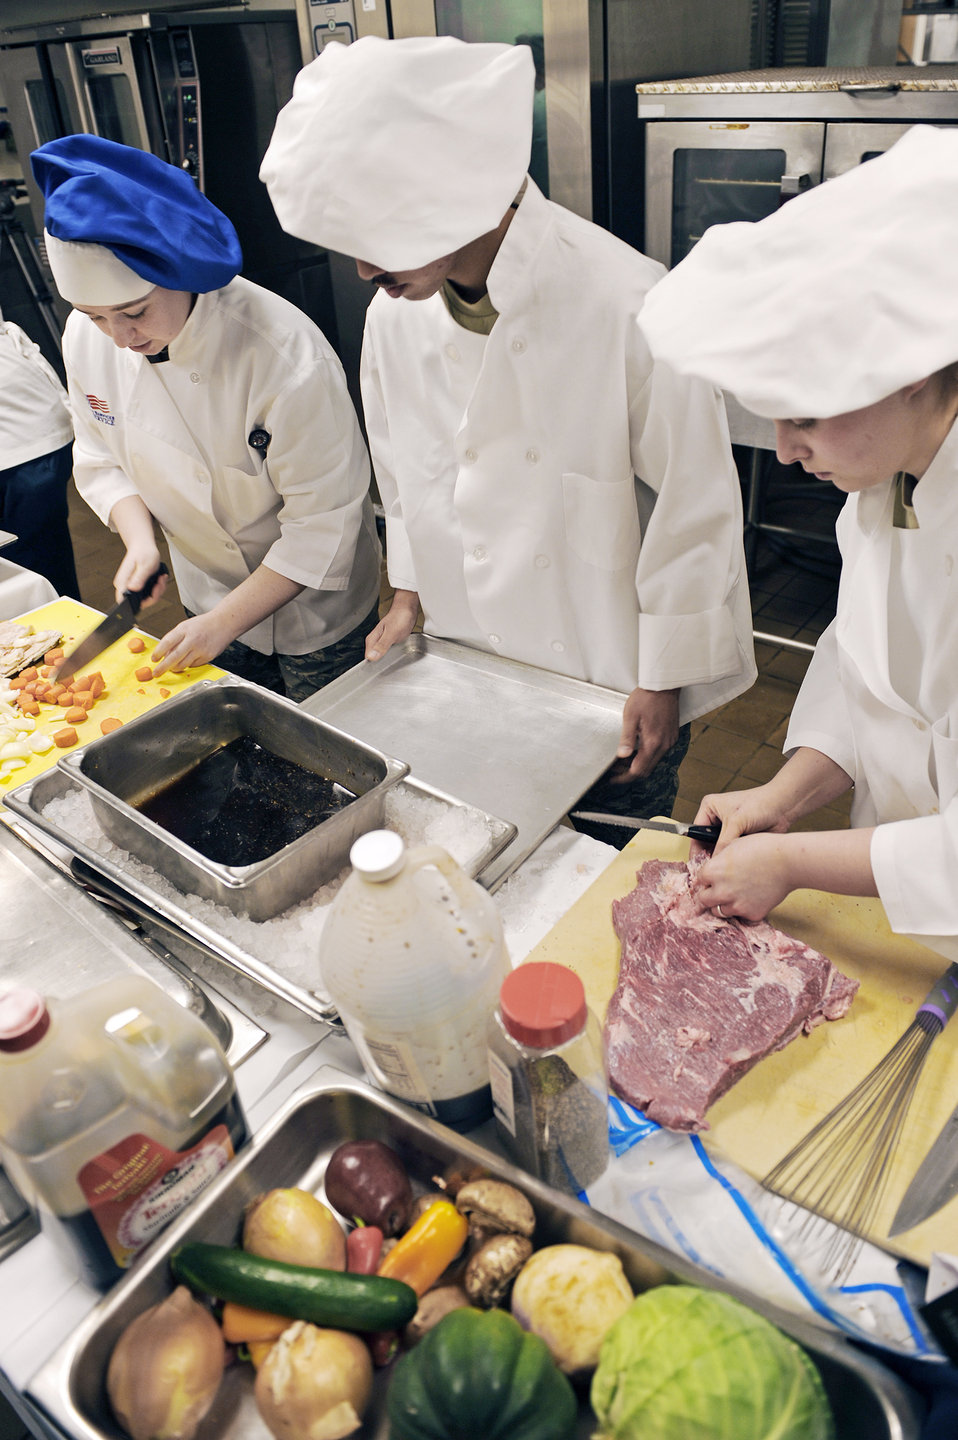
Ellsworth Airmen participate in cooking competition

(From left) Airmen 1st Class Steffanie Whipple, Michael Azares and Sarah Meador prepare a teriyaki corned beef for the second annual